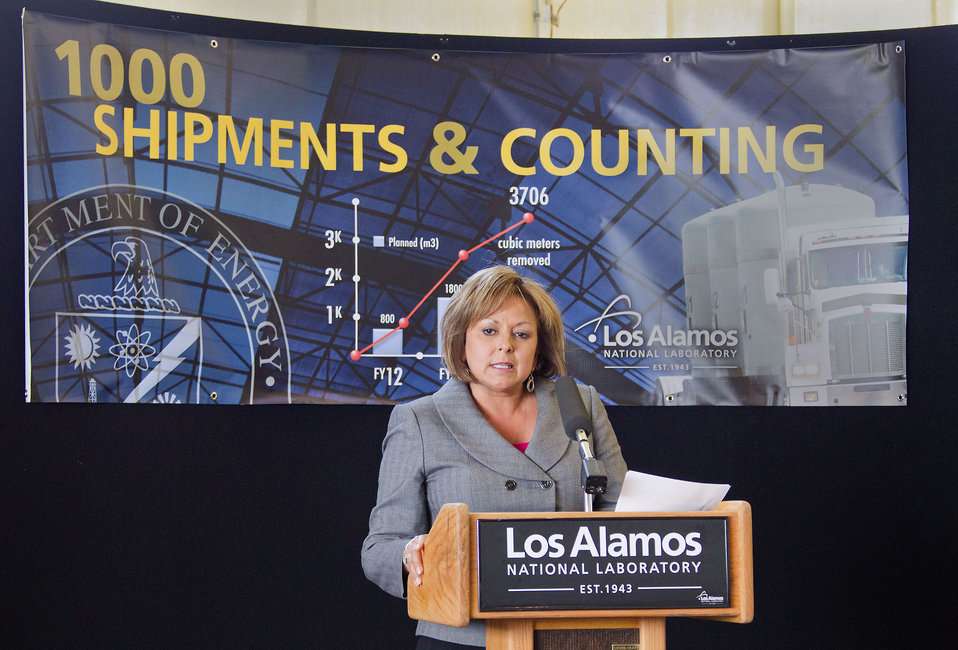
1000th Shipment of TRU Waste from LANL